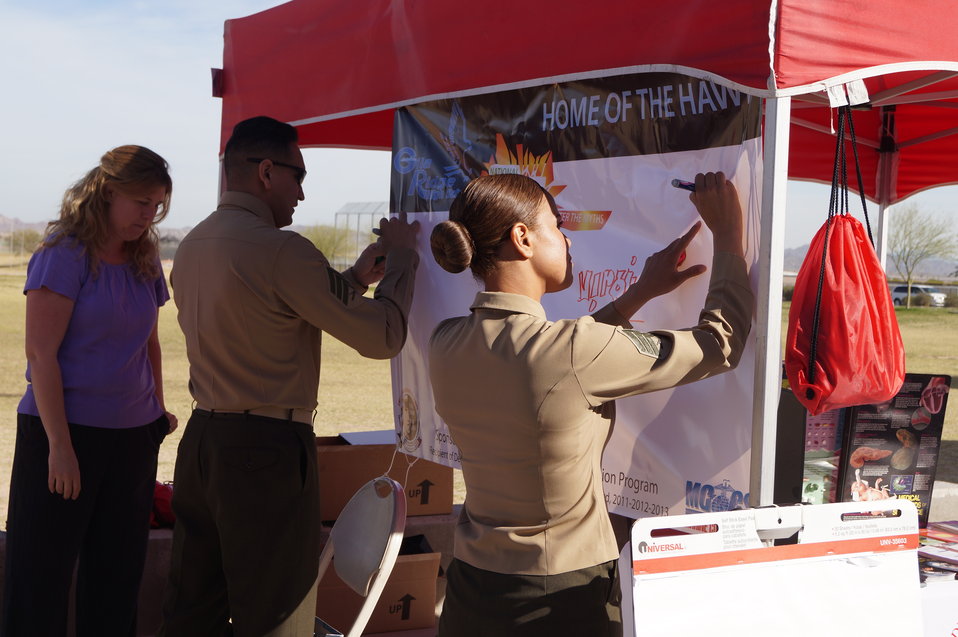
National Drug Facts Week - GILA RIDGE HS

The Drug Demand Reduction Program out of Yuma Arizona held numerous events at local schools to support NIDA's National Drug Facts Week, Jan. 27-Feb. 2 2014. Teens participated in drug awareness games, and helped to Shatter the Myths about teen substance abuse.